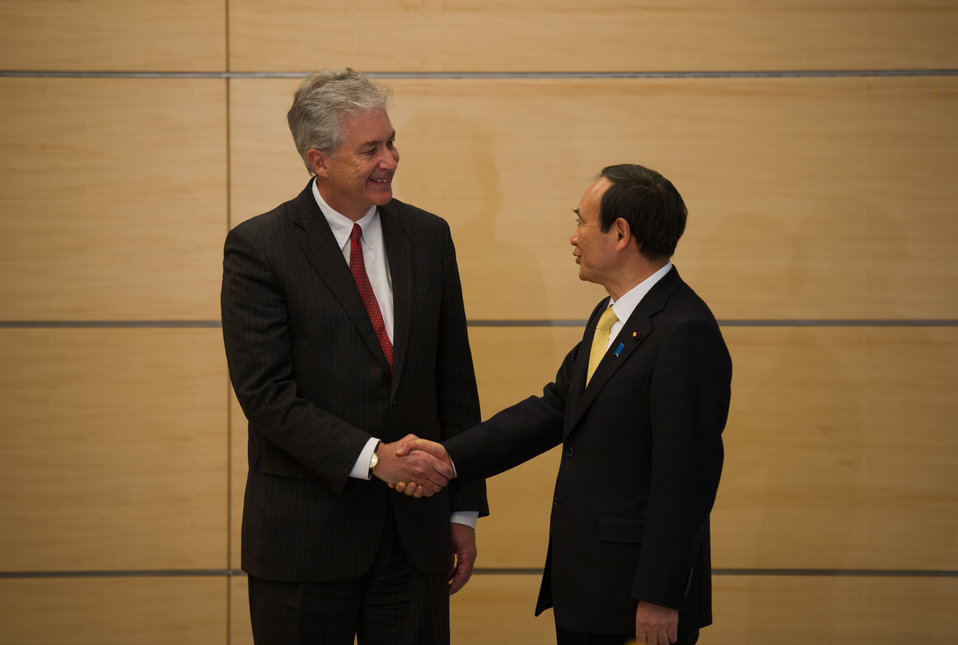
Deputy Secretary Burns Meets Japan’s Chief Cabinet Secretary Suga

U.S. Deputy Secretary of State William J. Burns is greeted by Japanese Chief Cabinet Secretary Yoshihide Suga in Tokyo, Japan, on January 24, 2014.